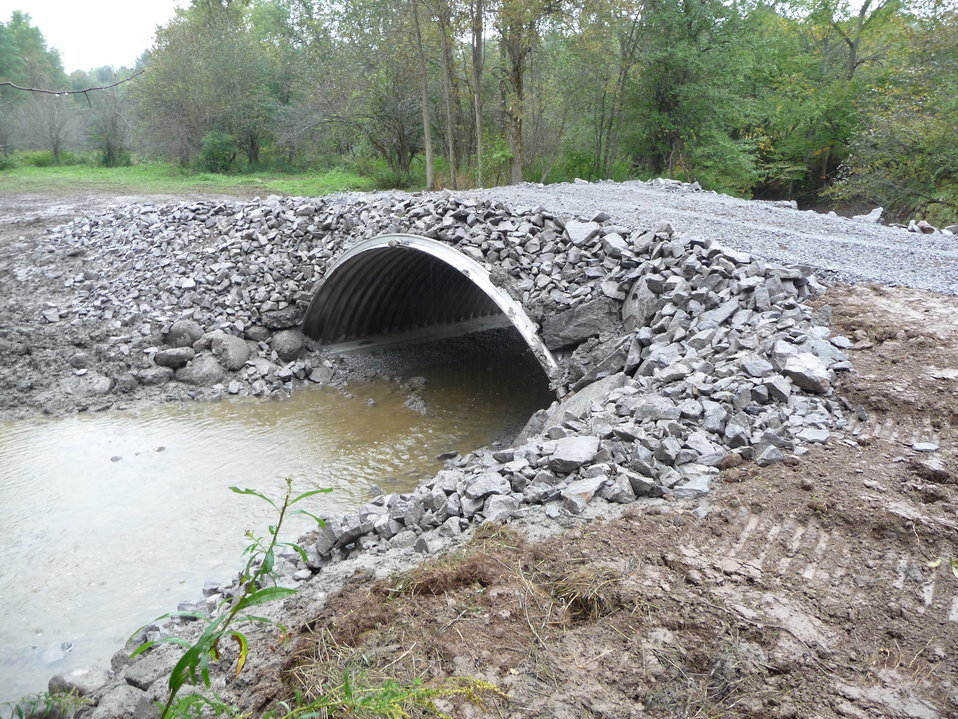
Little Sucker Brook: Finished project

The new stream crossing enables the migration of fish including suckers, bullhead and walleye.

The State University of New York College of Environmental Science and Forestry will monitor the site under the instruction of John Farrell.

The Fish Enhancement, Mitigation, and Research Fund (FEMRF) financed the project. FEMRF was established as part of a settlement agreement with the New York Power Authority reached in the relicensing of the St. Lawrence-Franklin D. Roosevelt Power Project.